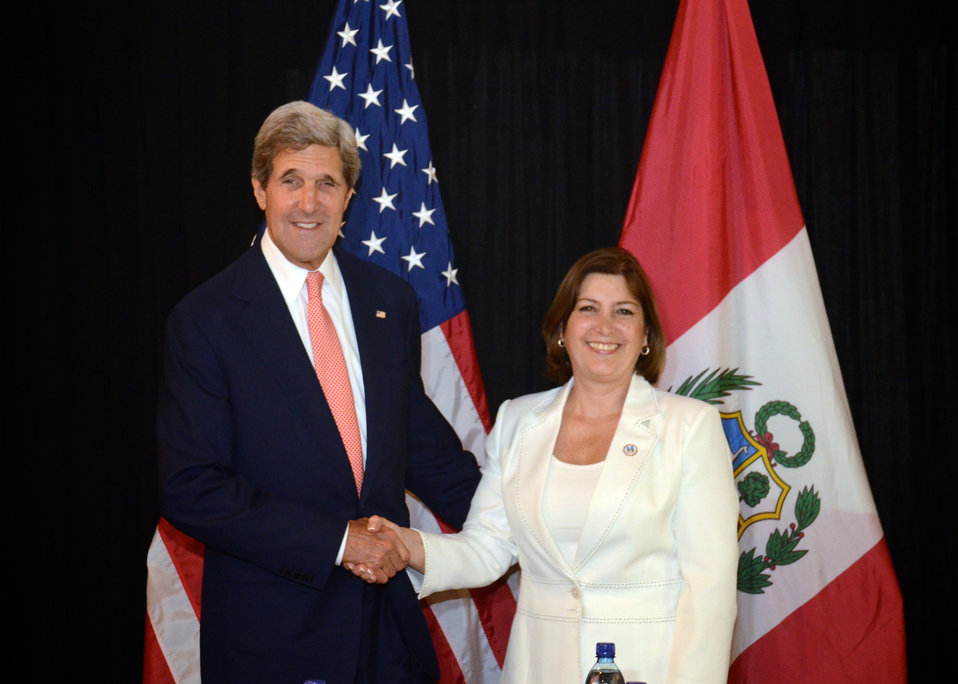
Secretary Kerry Meets With Peruvian Foreign Minister Rivas

U.S. Secretary of State John Kerry holds a bilateral meeting with Peruvian Foreign Minister Eda Rivas on the sidelines of the General Assembly of the Organization of American States in Antigua, Guatemala, on June 5, 2013.